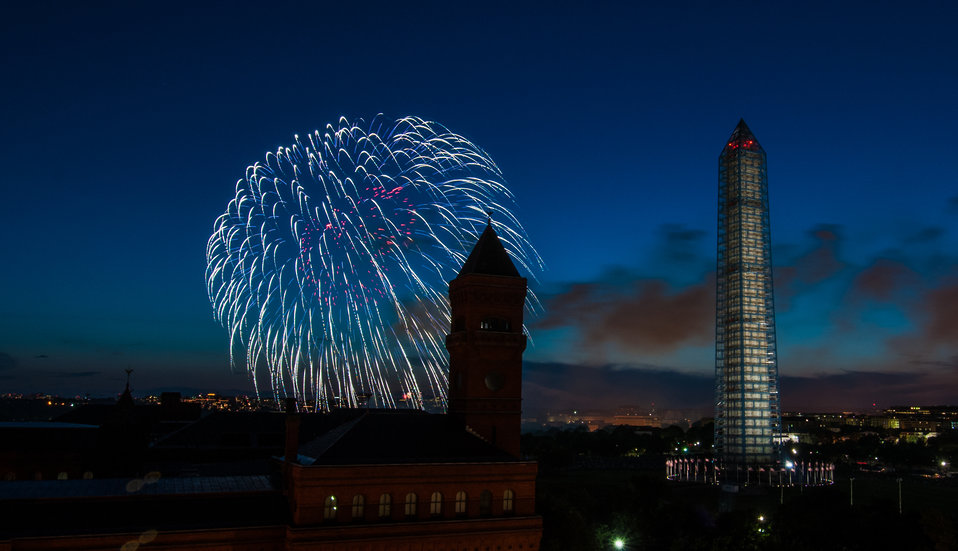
4th of July fireworks as seen from the U.S. Department of Agriculture (USDA) headquarters building, with the USDA Forest Service Yates Building in the foreground, left, and the Washington Monument in Washington, D.C., on July 4, 2013.